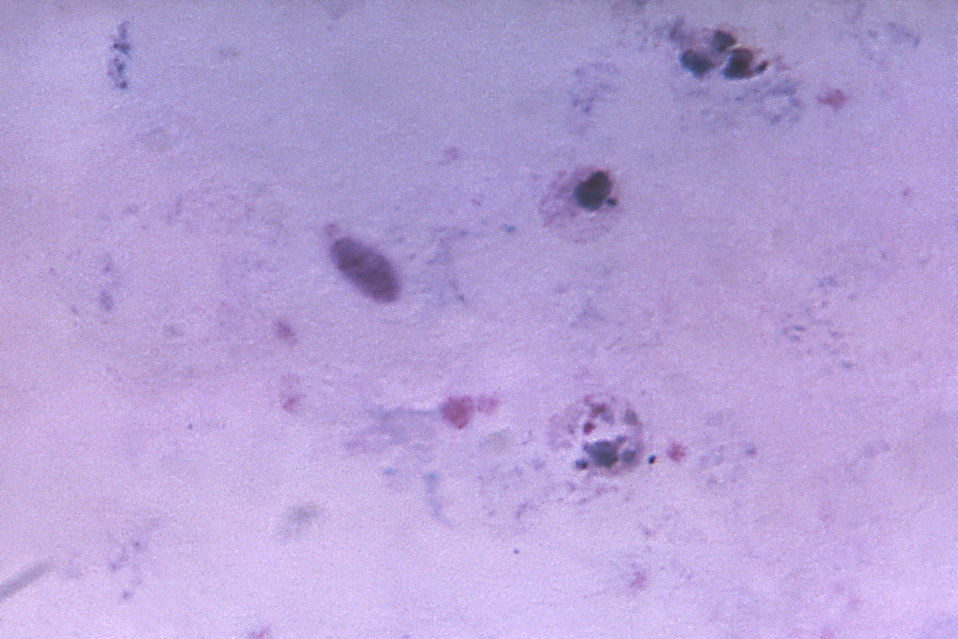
This thick film micrograph depicts two P. vivax trophozoites and fused platelets, Magnified 1125X.